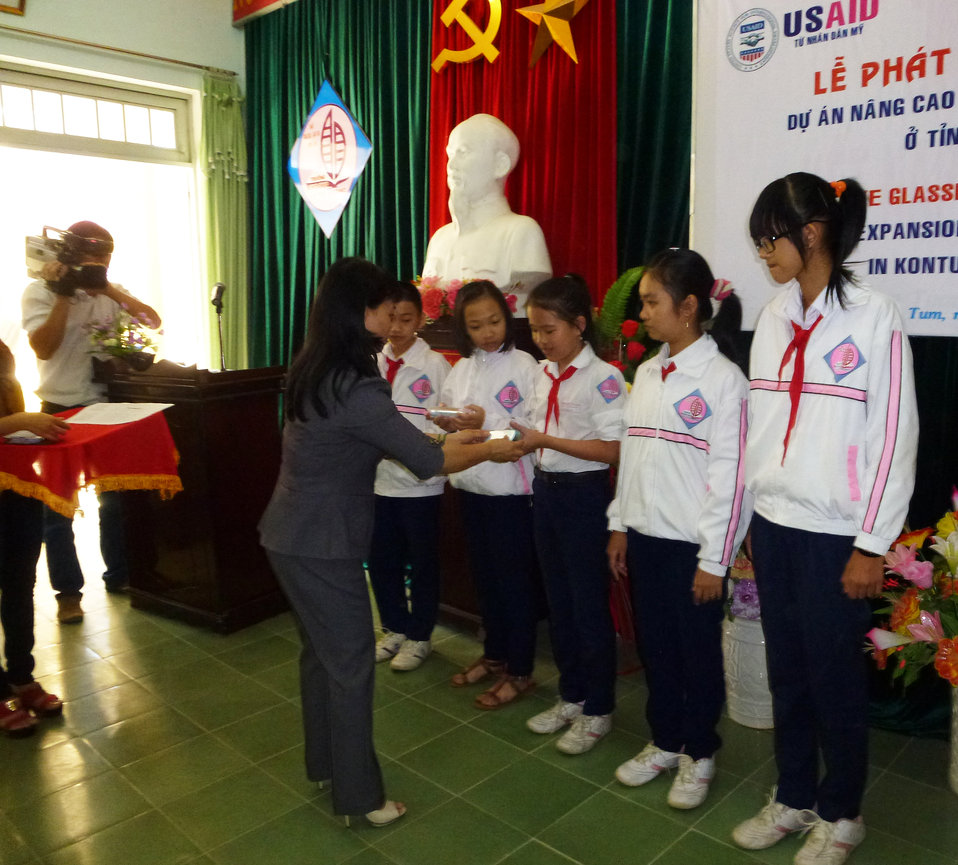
Eye screening at for students in Kon Tum, Vietnam, supported by USAID and HKI